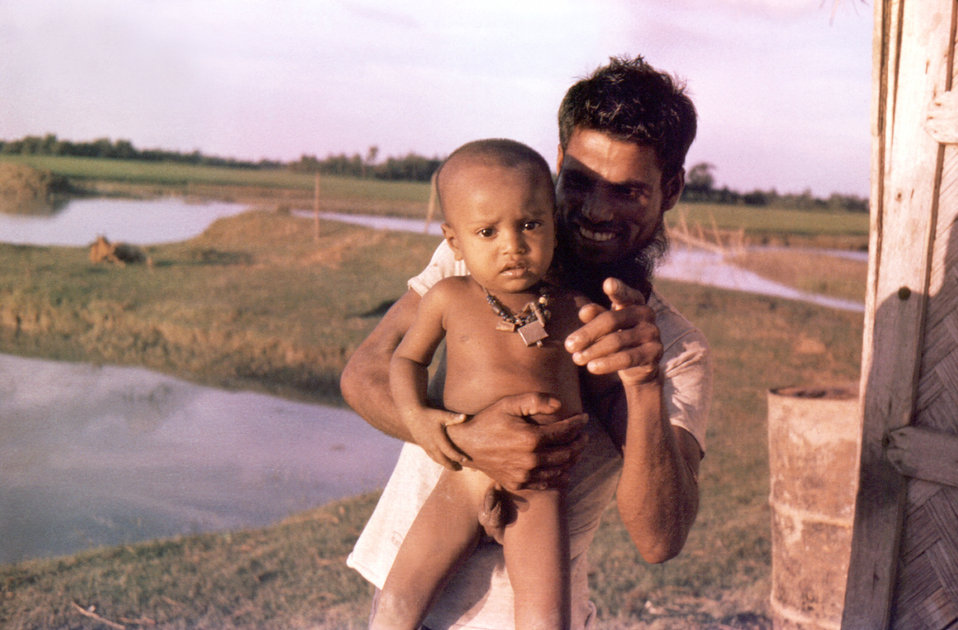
This September, 1975 photograph, showed Ali Usus, the cook at the 'Lord Harding Bazaar' smallpox outbreak site, holding his young son. The Bazaar can be found on Bangladesh's largest island, Bhola Island.